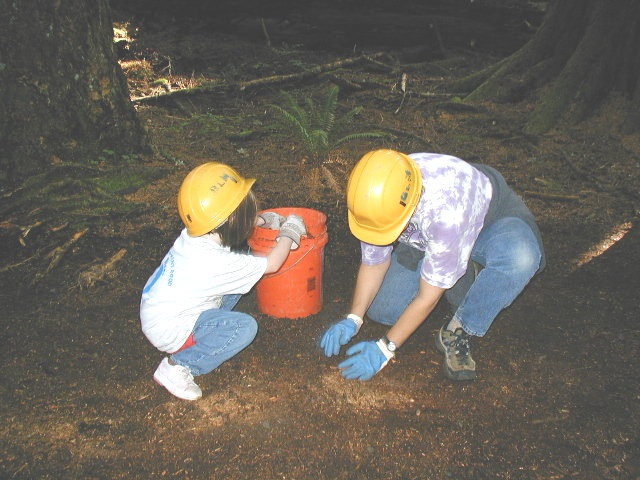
Teamwork was a key element on National Public Lands Day